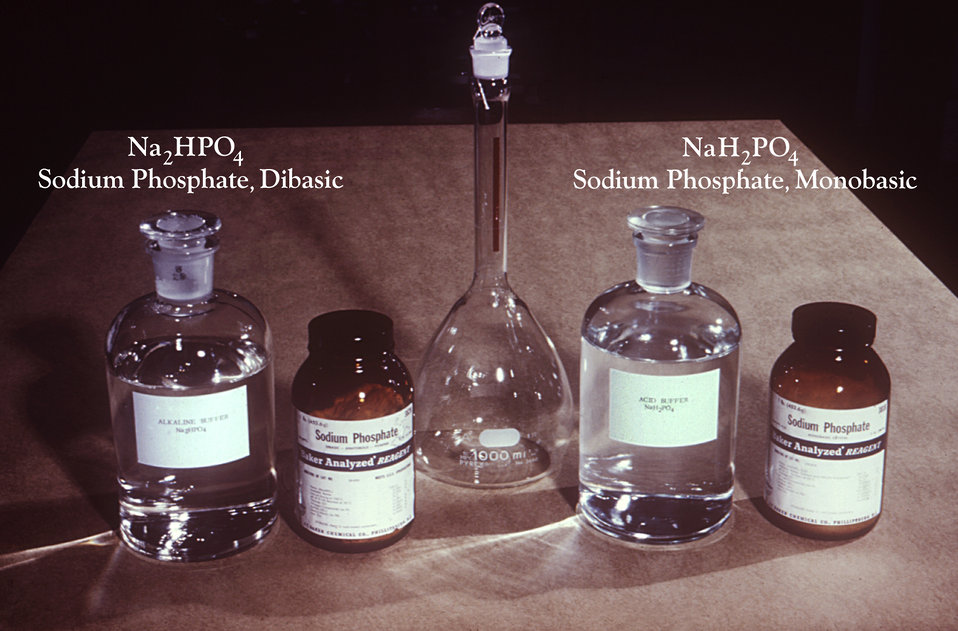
The stock Giemsa stain must first be diluted with water, and buffered to a pH of 6.8 or 7.0 - 7.2 depending on how it's used.